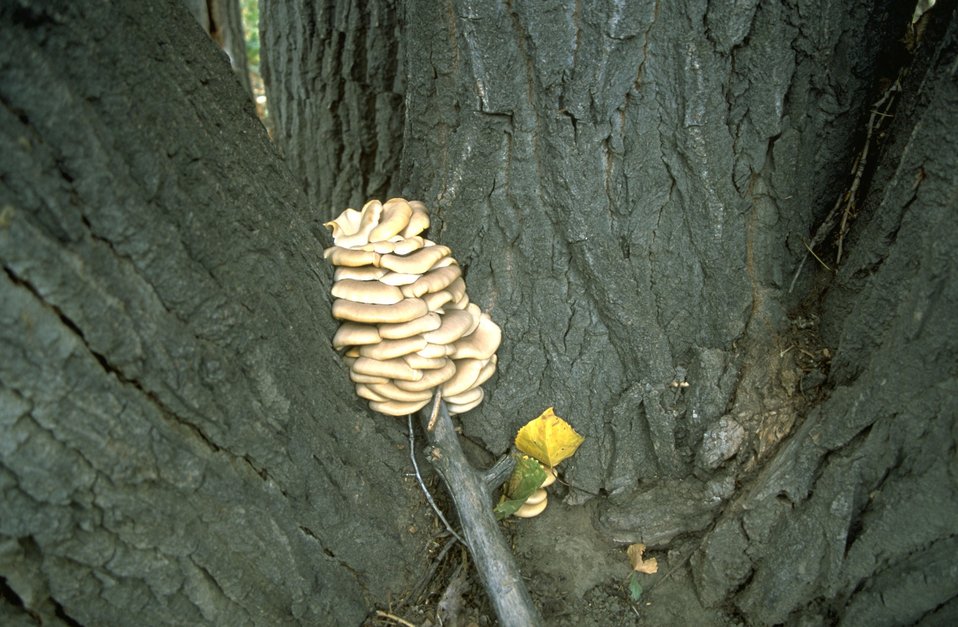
Tree fungus at Howrey Island Recreation Area